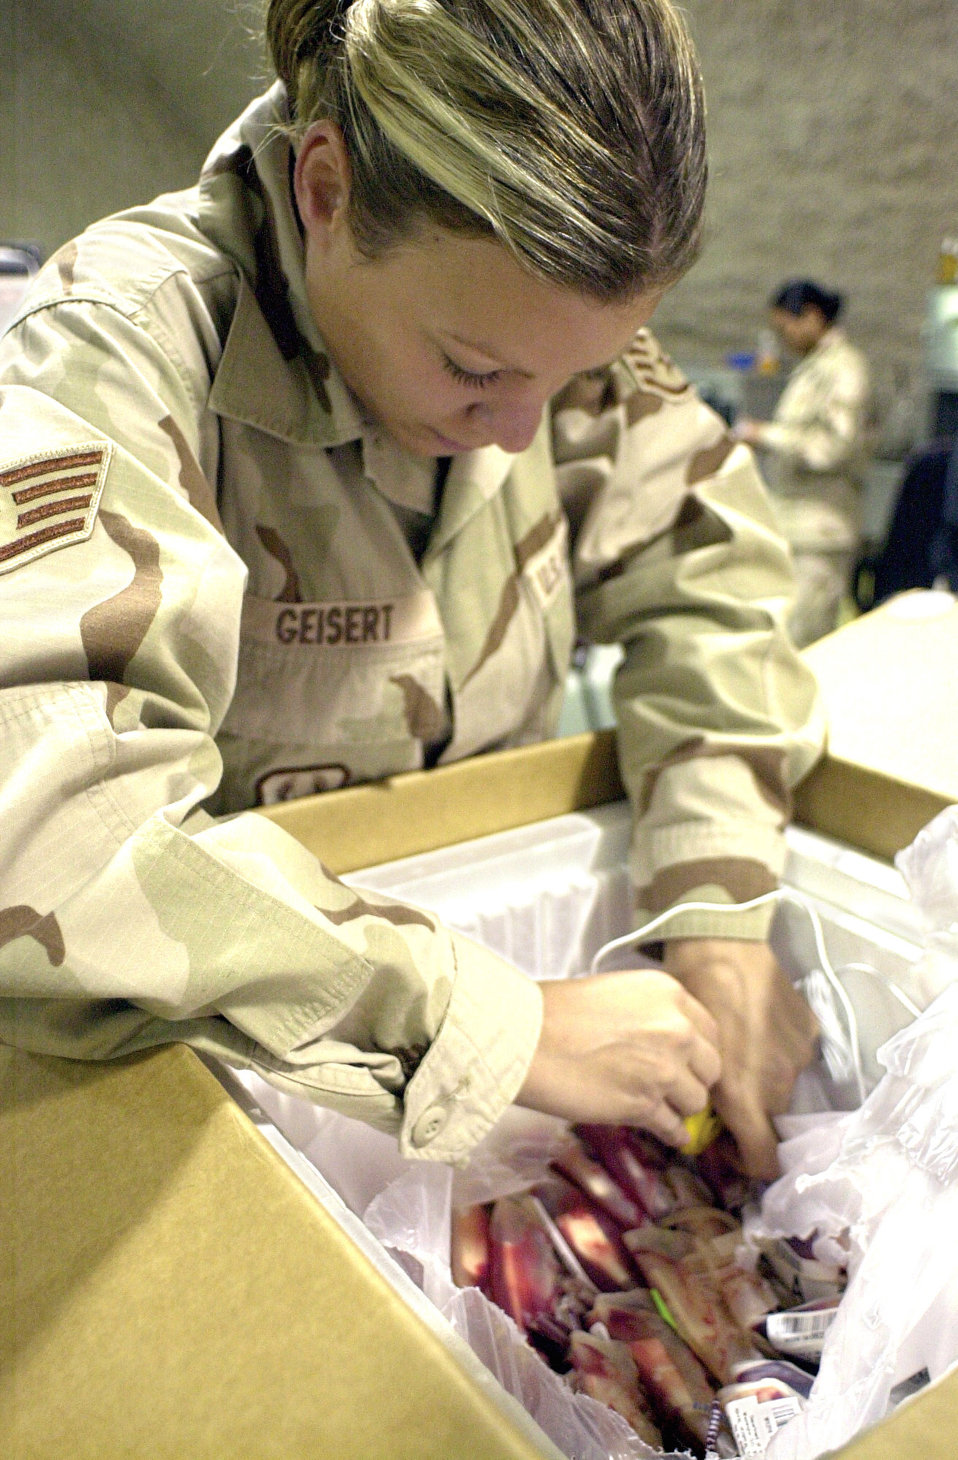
Blood transfer center essential to mission

SOUTHWEST ASIA -- Staff Sgt. Amanda Geisert inserts a thermometer into a package filled with packets of red blood cells to ensure the supply has stayed within its required temperature during transport. She is assigned to the blood transshipment center at a forward-deployed location here.